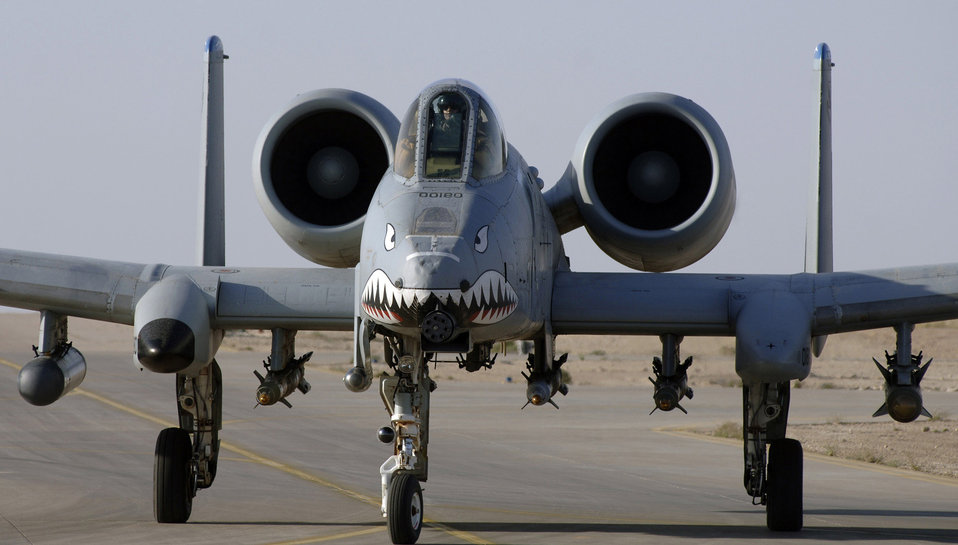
Sept. 8 airpower summary: A-10s bomb anti-Afghan forces

An A-10 Thunderbolt II prepares to take off to provide close-air support to ground troops in Afghanistan.